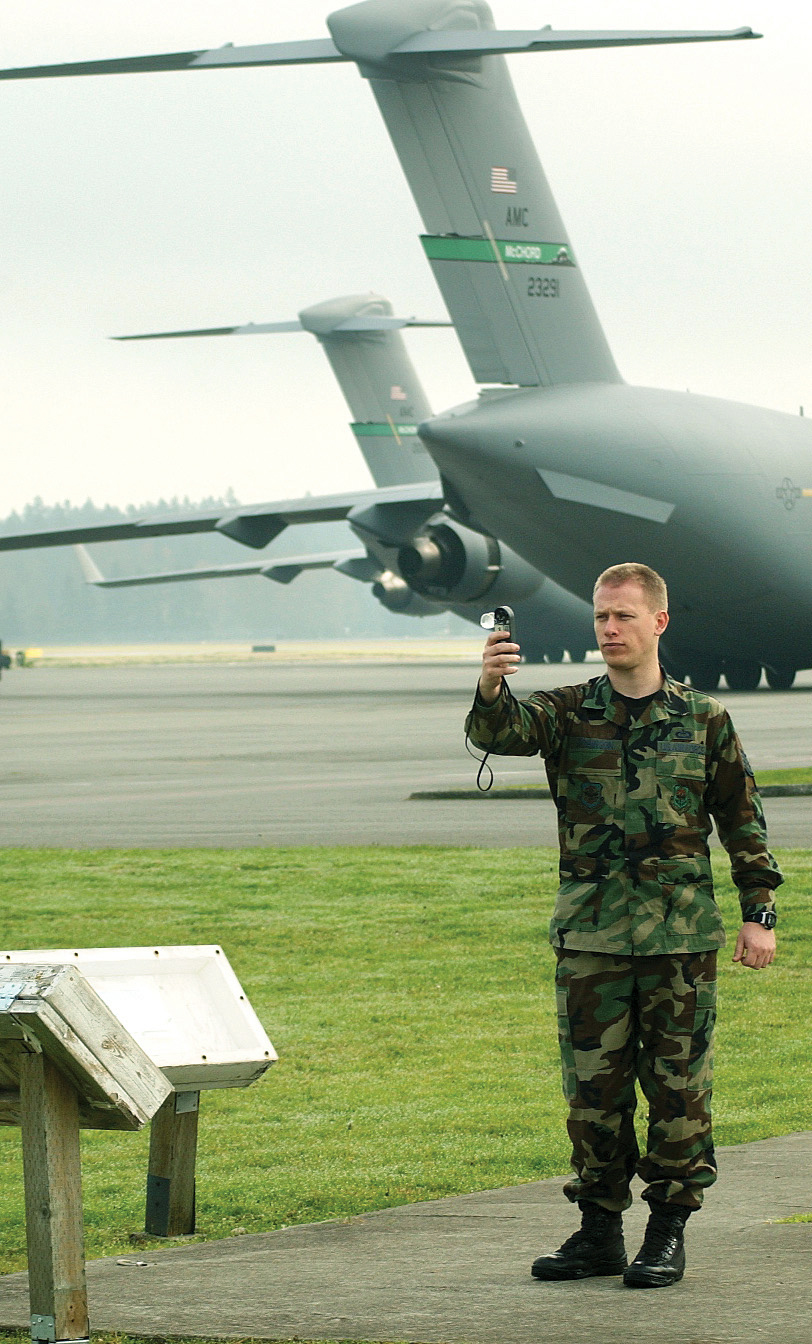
How cold is it?

MCCHORD AIR FORCE BASE, Wash. -- Staff Sgt. Duane Robinson takes an outside weather observation using a weather sensor that judges temperature, wind speed, and moisture here recently. Sergeant Robinson is a weather forecaster assigned to the 62nd Operation Support Squadron.